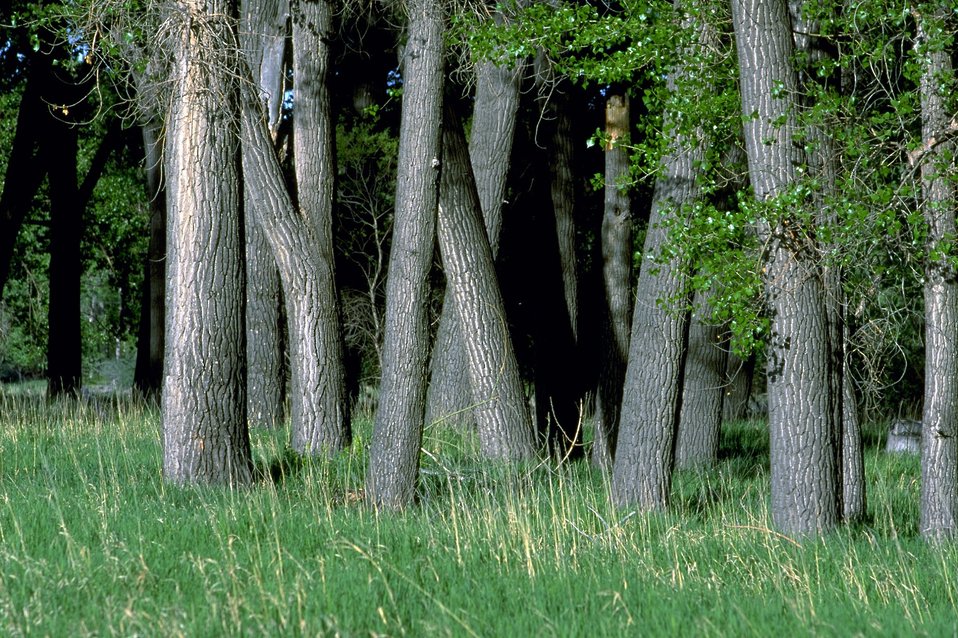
Dense grove of cottonwood trees along the Clark's Fork of the Yellowstone River